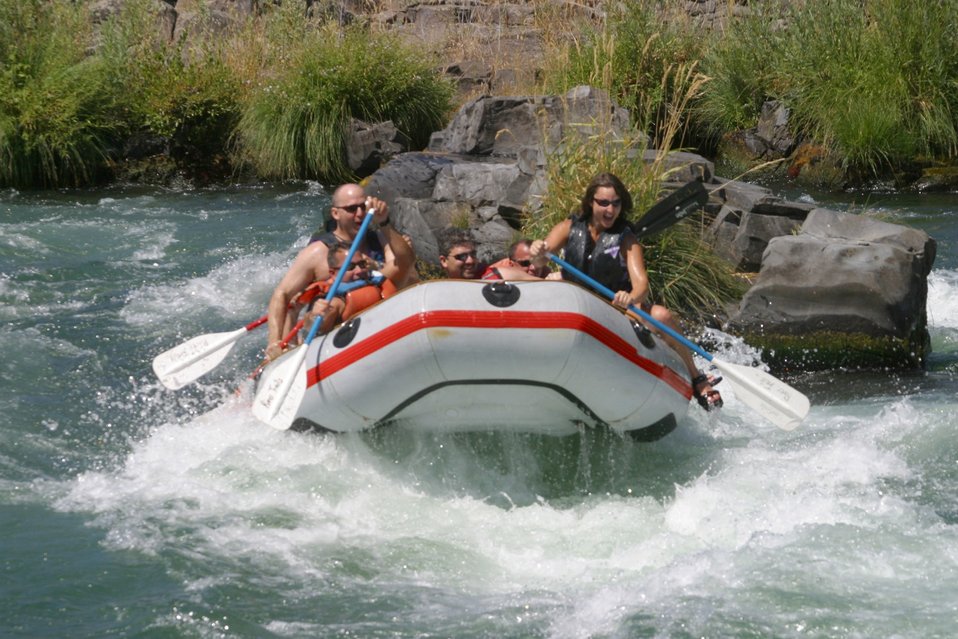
Wapinitia Rapids class III, has large roller coaster waves. 7/26/03 Pelton Dam 3600 cfs: Moody Rapids 4300 cfs.